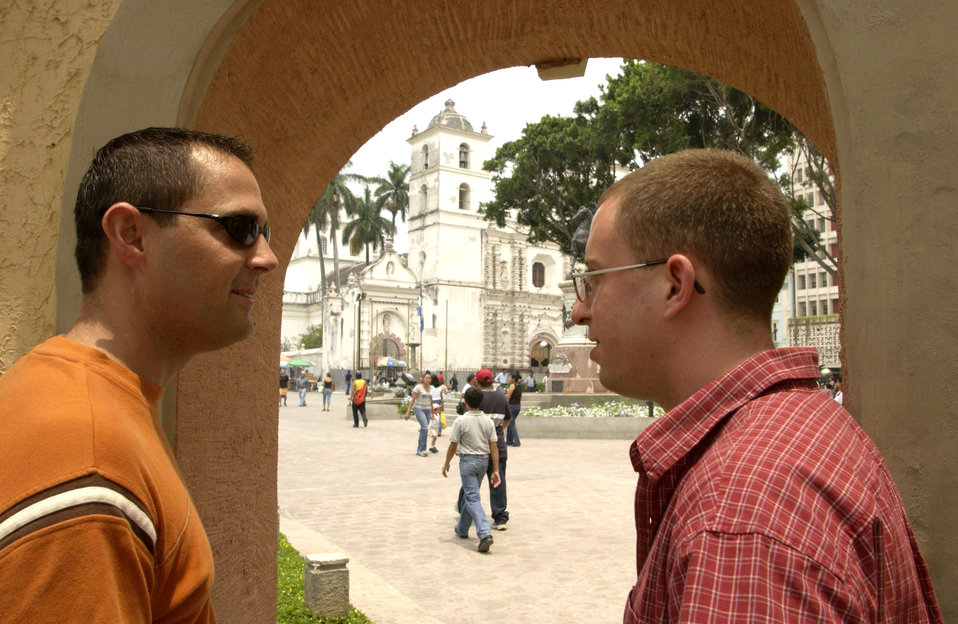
For U.S. troops, Tegucigalpa's good life has its dangers

TEGUCIGALPA, Honduras -- Capts. Dan Beard and Cliff Bayne (left to right) discuss where they'll go after their sightseeing tour of the capital city's Plaza Morazan. The logistics officers for Joint Task Force-Bravo at Soto Cano Air Base, Honduras, enjoy visiting different sections of the country when they get a chance. Without getting to know the people and the culture,